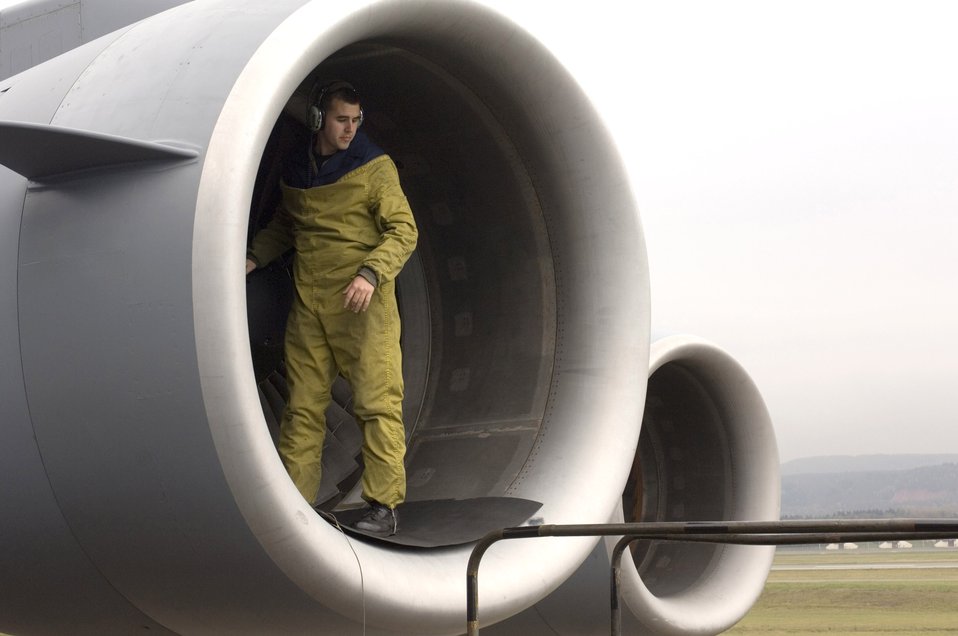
Rivets

RAMSTEIN AIR BASE, Germany (AFPN) -- Senior Airman Kyle Bowers looks for loose or missing rivets in the inlets and exhausts of a C-17 Globemaster III engine. Airman Bowers is a crew chief with the 723rd Air Mobility Squadron.